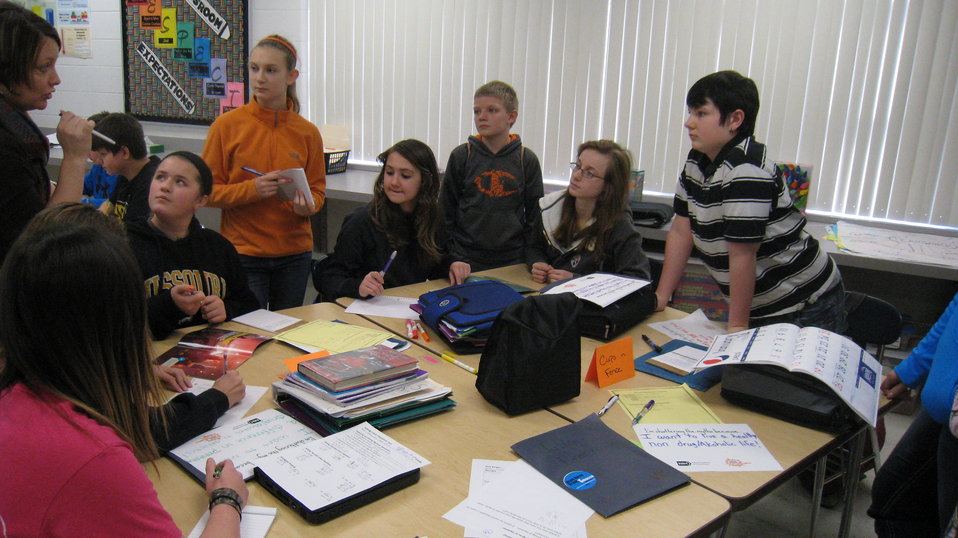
YLC Event: NIDA 2014

Teenagers from the Van Buren County SAFE Coalition's, Youth Leadership Council (YLC) in Keosauqua, Iowa participate in various events during National Drug Facts Week, 2014.